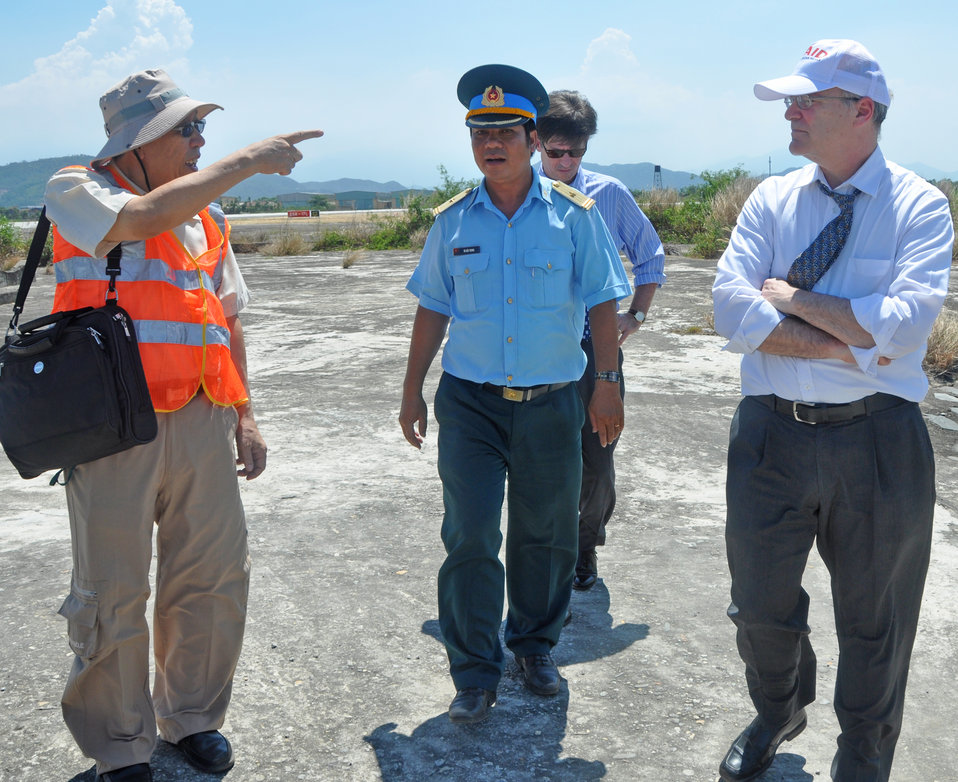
USAID Deputy Administrator Donald Steinberg and delegation visit Danang Airport.